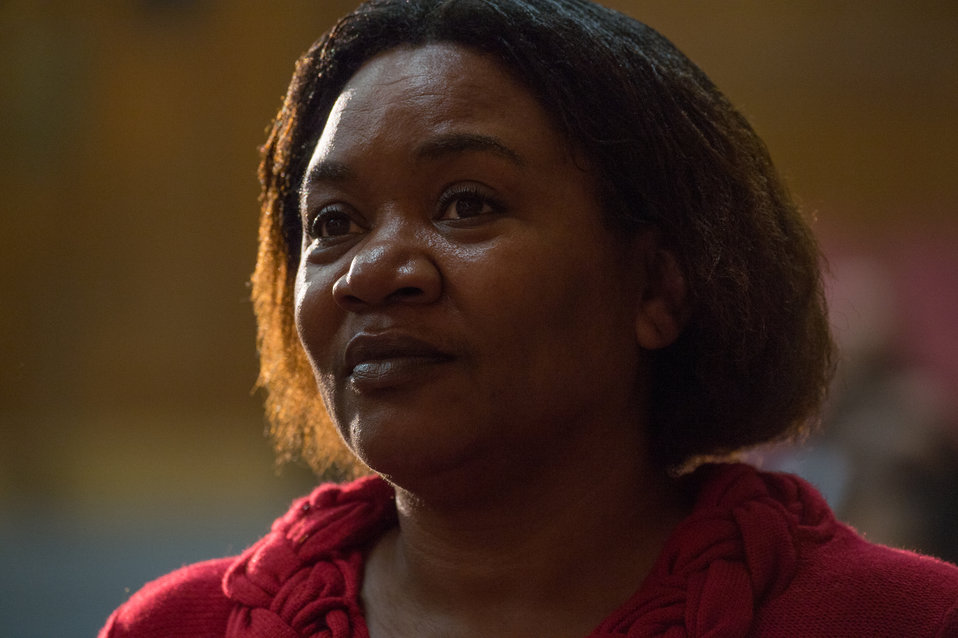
U.S. Department of Agriculture (USDA) personnel who have served, or are serving in a Uniformed Armed Service are called by their past or present Service to stand and be honored with the singing of each of the major Service songs sung by soprano Amy Keesun Kwon, during the 2013 USDA Veterans’ Day Observance, whose theme is “VALOR, COURAGE, SACRIFICE – HONORING ALL WHO SERVED,” in Washington, DC, on Wednesday, November 20, 2013.